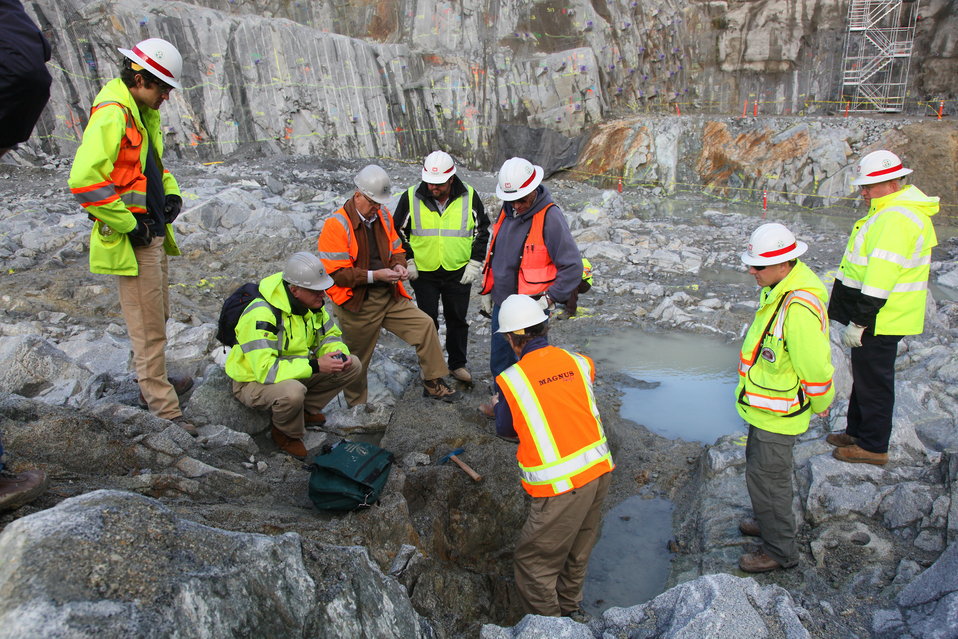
Evaluating the Folsom Dam auxiliary spillway foundation

A team of geologists from the U.S. Army Corps of Engineers Sacramento District meets with a consultant review board at the excavation site for the Folsom Dam auxiliary spillway in Folsom, Calif., Feb. 29, 2012. The board, made up of highly-qualified geology, geotechnical and structural experts, was hired to evaluate the integrity of the spillway’s foundation - a requirement for Corps’ civil works construction projects intended to reduce risk to lives to ensure they meet the highest safety standards. The spillway will allow Folsom Dam to release water sooner and more safely. The project is part of the Folsom Dam Joint Federal Project, a joint effort of the U.S. Army Corps of Engineers Sacramento District, the U.S. Bureau of Reclamation, the Central Valley Flood Protection Board and the Sacramento Area Flood Control Agency to improve the safety of the dam and reduce flood risk for the greater Sacramento area.